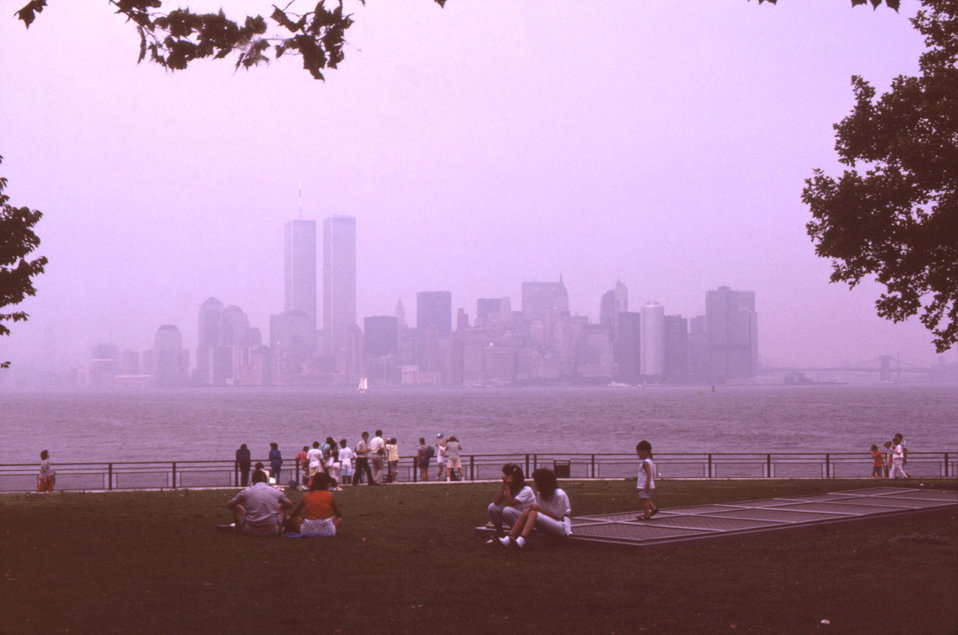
Though on this day in 1988, there was considerable atmospheric smog obstructing a clear view, this photograph captured the pre-September 11, 2001 Manhattan skyline, with the former two World Trade Towers standing tall above the rest of New York City's buildings. This image was taken from a Liberty Island vantage point.